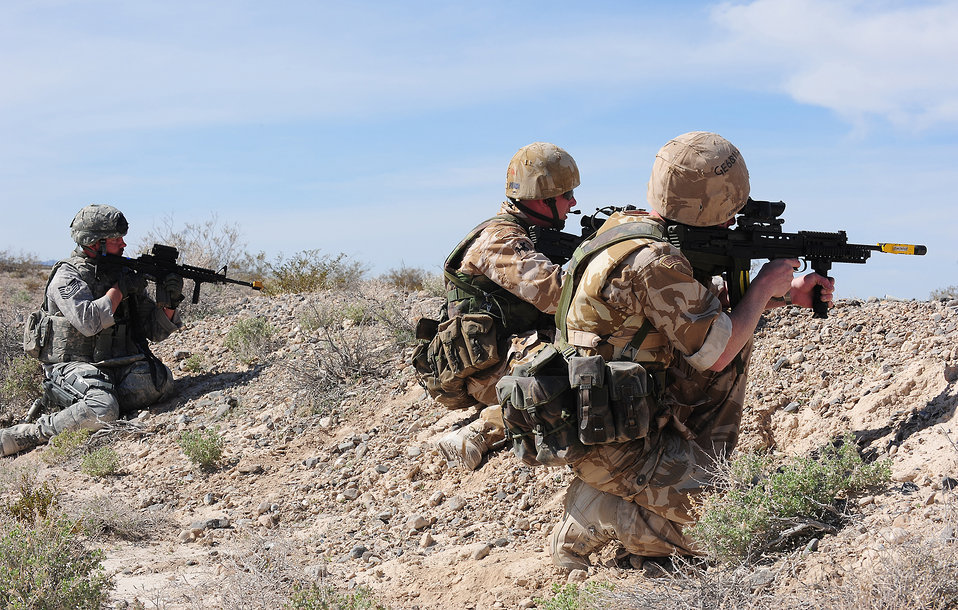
Desert Eagle

Tech. Sgt. Sean Gray and British airmen provide protection for a four-man foot patrol March 14, 2011, during Desert Eagle at the Nevada Test and Training Range. Sergeant Gray is an 822nd Base Defense Squadron squad leader.